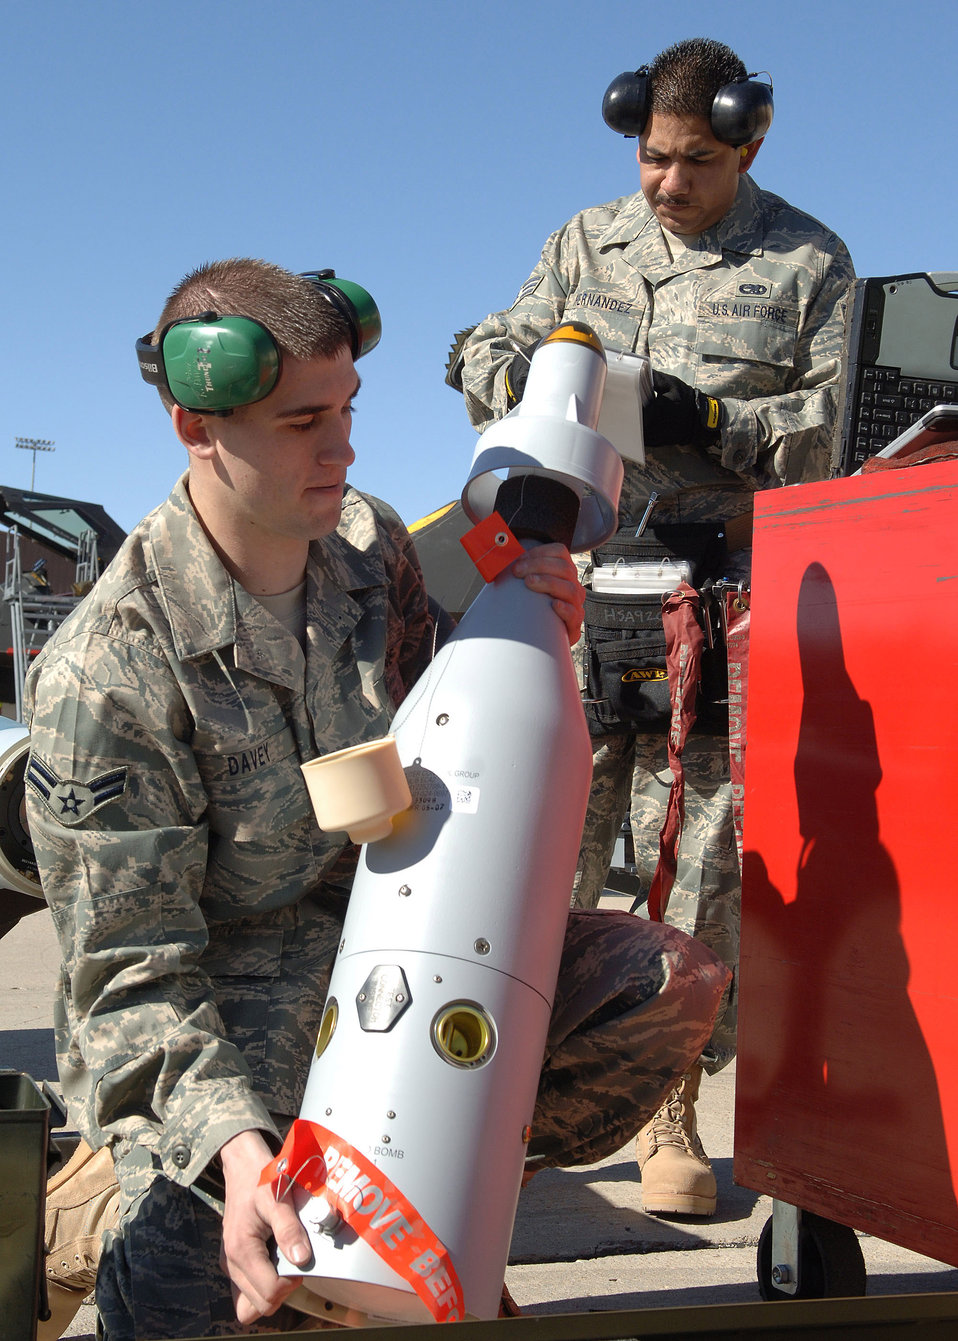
Holloman weapon loaders compete for last time on F-117

Airman 1st Class Kyle Davey and Senior Airman Ignacio Hernandez prepare a guided bomb unit-12 for load the F-117 Nighthawk Weapons Load Crew of the Year Competition Jan. 18 at Holloman Air Force Base, N.M. The competition is the last of its kind for the F-117. Airmen Davey and Hernandez are assigned to the 49th Aircraft Maintenance Squadron.